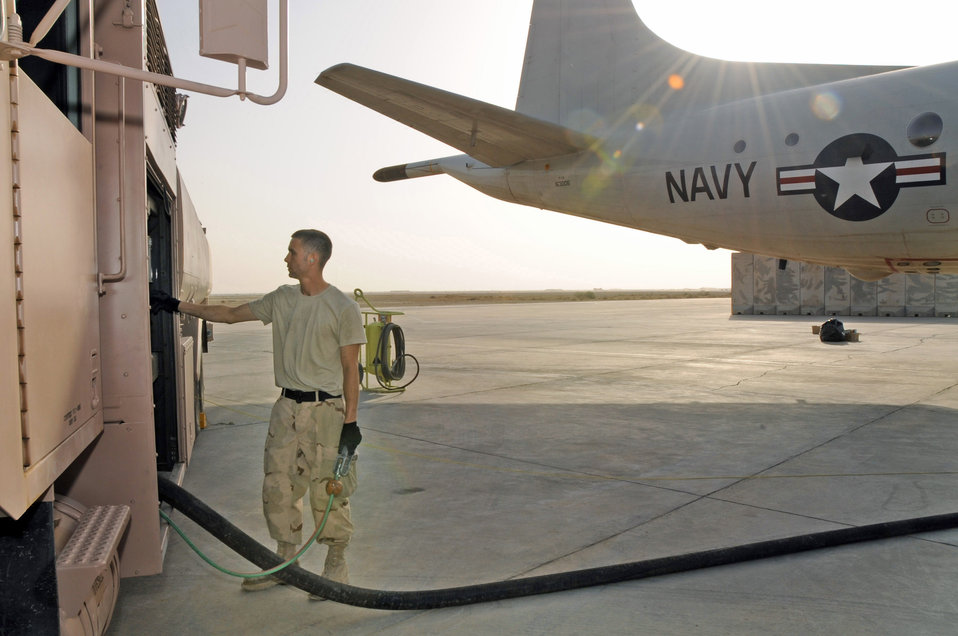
Refueling the P-3

Airman 1st Class Christopher Carbon refuels a Navy P-3 Orion April 23 at Ali Base, Iraq. Airman Carbon, a 407th Expeditionary Logistics Readiness Squadron refueling unit operator, has pumped more than 1.2 million gallons of gasoline since arriving at Ali Base in January. The Petroleum, Oil and Lubricants section refuels Navy P-3s, MQ-1 Predators, helicopters and various cargo aircraft to support the mission in Southwest Asia. Airman Carbon is deployed from Ramstein Air Base, Germany.